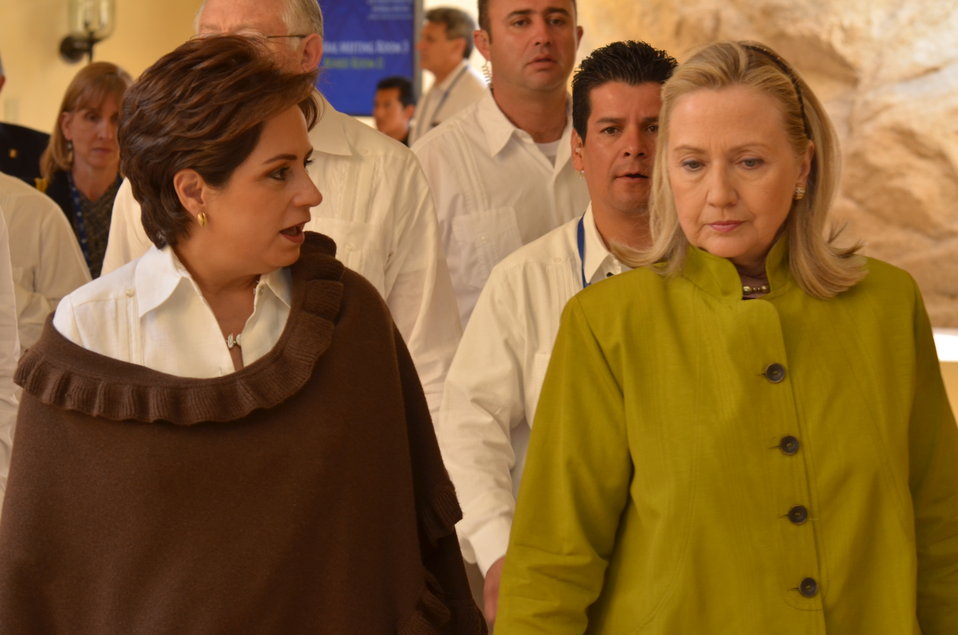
Secretary Clinton With Foreign Secretary Espinosa of Mexico

U.S. Secretary of State Hillary Rodham Clinton speaks with Mexican Foreign Secretary Patricia Espinosa during the U.S.-Mexico Transboundary Hydrocarbons Agreement signing ceremony in Los Cabos, Mexico, February 20, 2012.